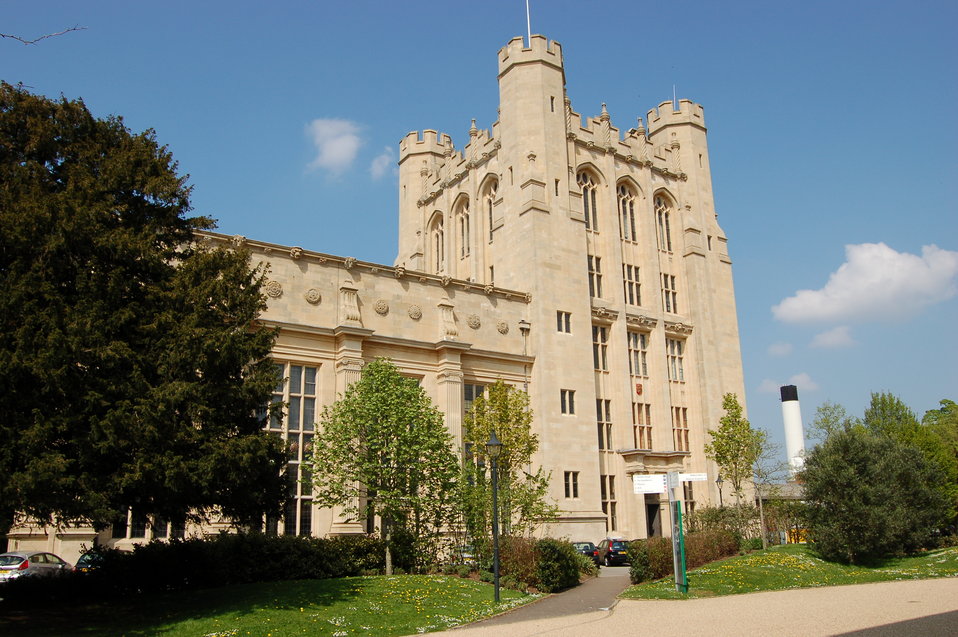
Photograph of the tower of the H. H. Wills Physics Laboratory at the University of Bristol.